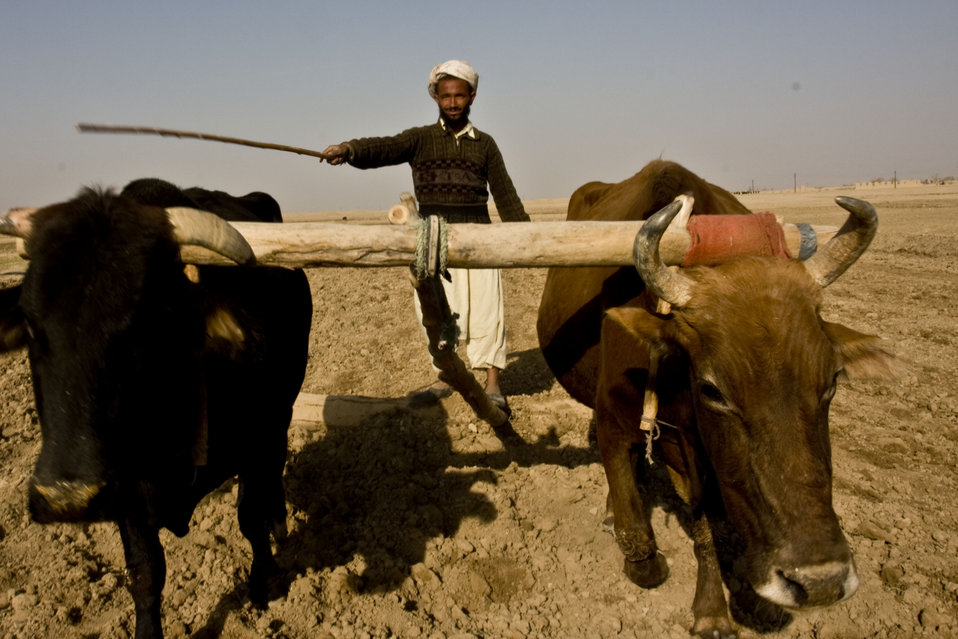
Agriculture is the backbone of the Afghan economy and society. Due to limited resources, Afghan farmers use simple and traditional equipment. USAID, in partnership with the Ministry of Agriculture, Irrigation and Livestock (MAIL) is mechanizing the agriculture sector to increase agricultural productivity in Afghanistan.